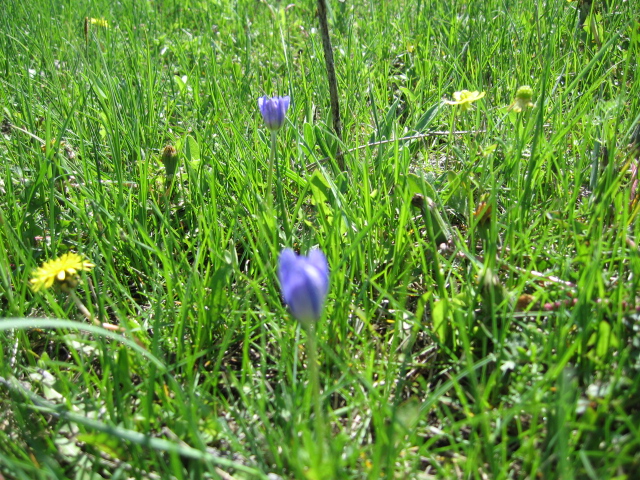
WPA Wildlife

Prairie Flowers